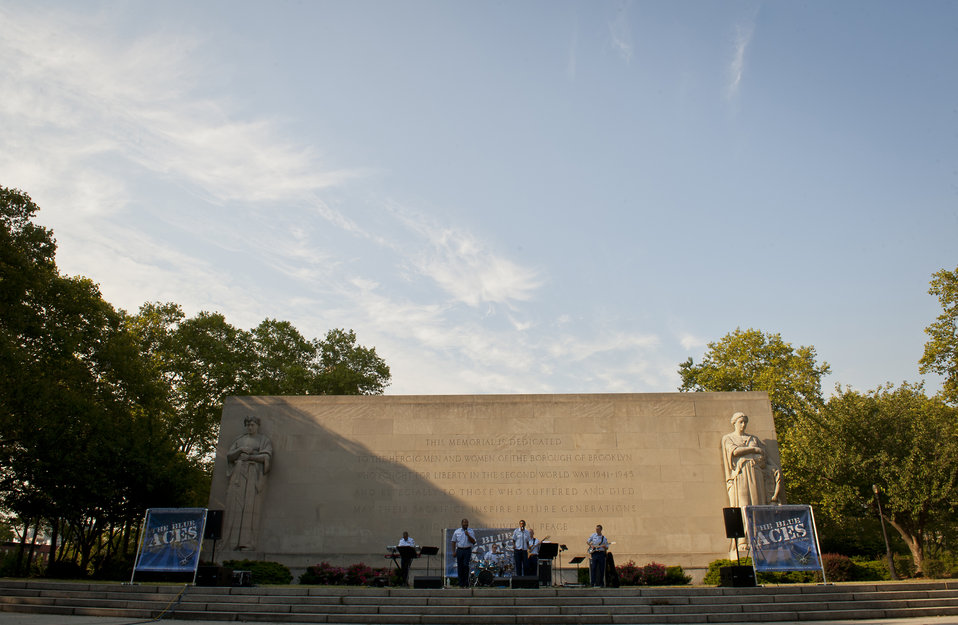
2012 Air Force Week NYC

United States Air Force band, The Blue Aces, sing for the attendees at the Brooklyn War Memorial in Brooklyn, N.Y., on August 20, 2012.